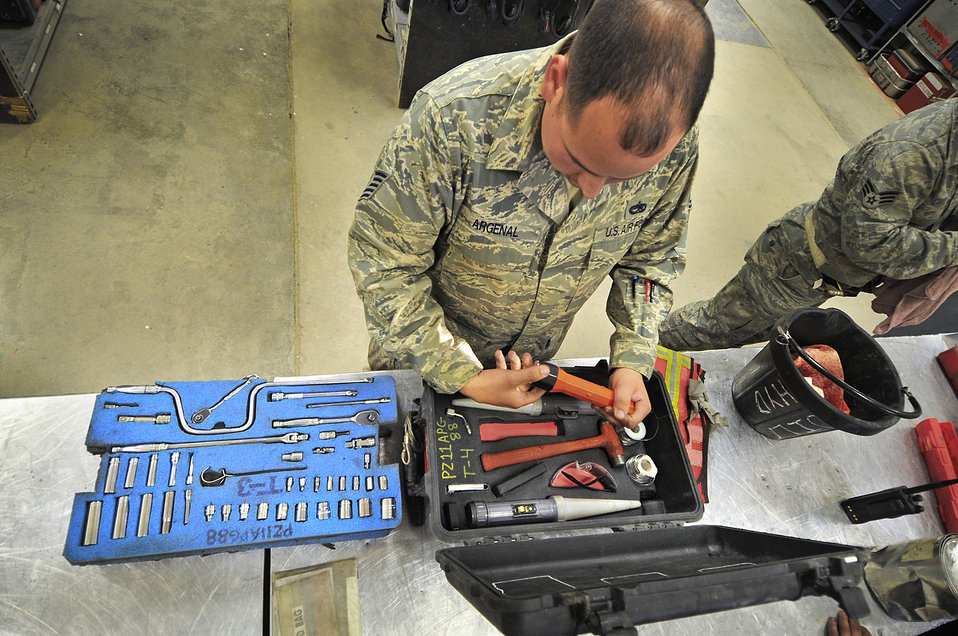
Airmen maintain the fight

Tech. Sgt. Homero Argenal checks a tool kit for accountability and serviceability before issuing it April 6, 2011, at an air base in Southwest Asia.